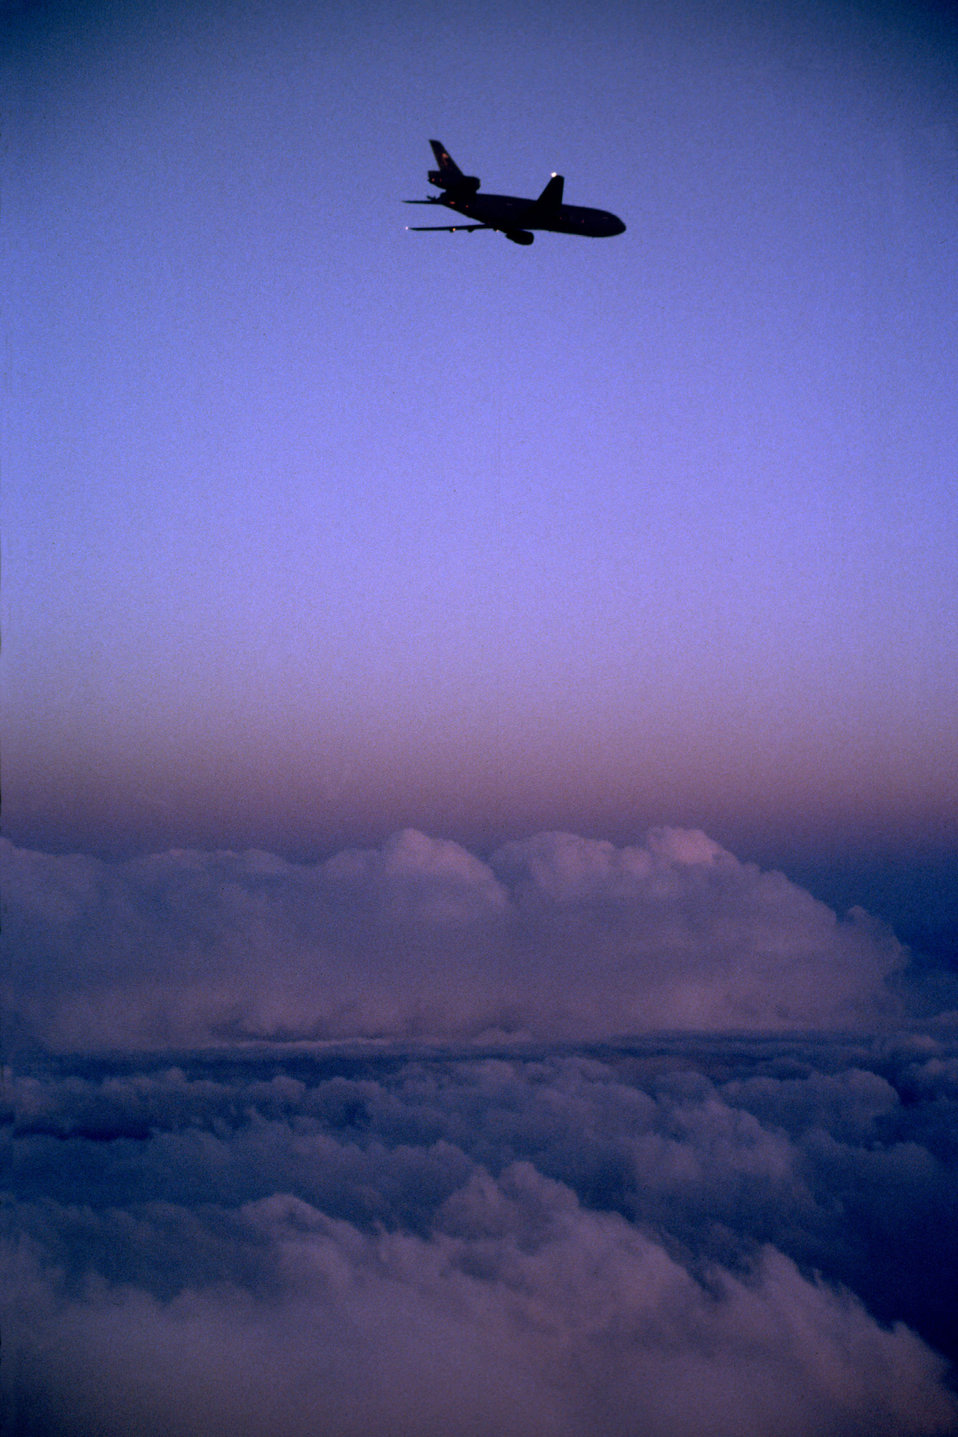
Where's the sun?

FILE PHOTO -- A KC-10A Extender flys into the retreated sun. Although the primary mission of the KC-10 is aerial refueling, it can combine the tasks of tanker and cargo aircraft by refueling fighters while carryling the fighters' support people and equipment during overseas deployments. The KC-10A can transport up to 75 people and about 170,000 pounds of cargo a distance of about 4,400 miles. Without cargo, the KC-10A's unrefueled range is more than 11,500 miles.